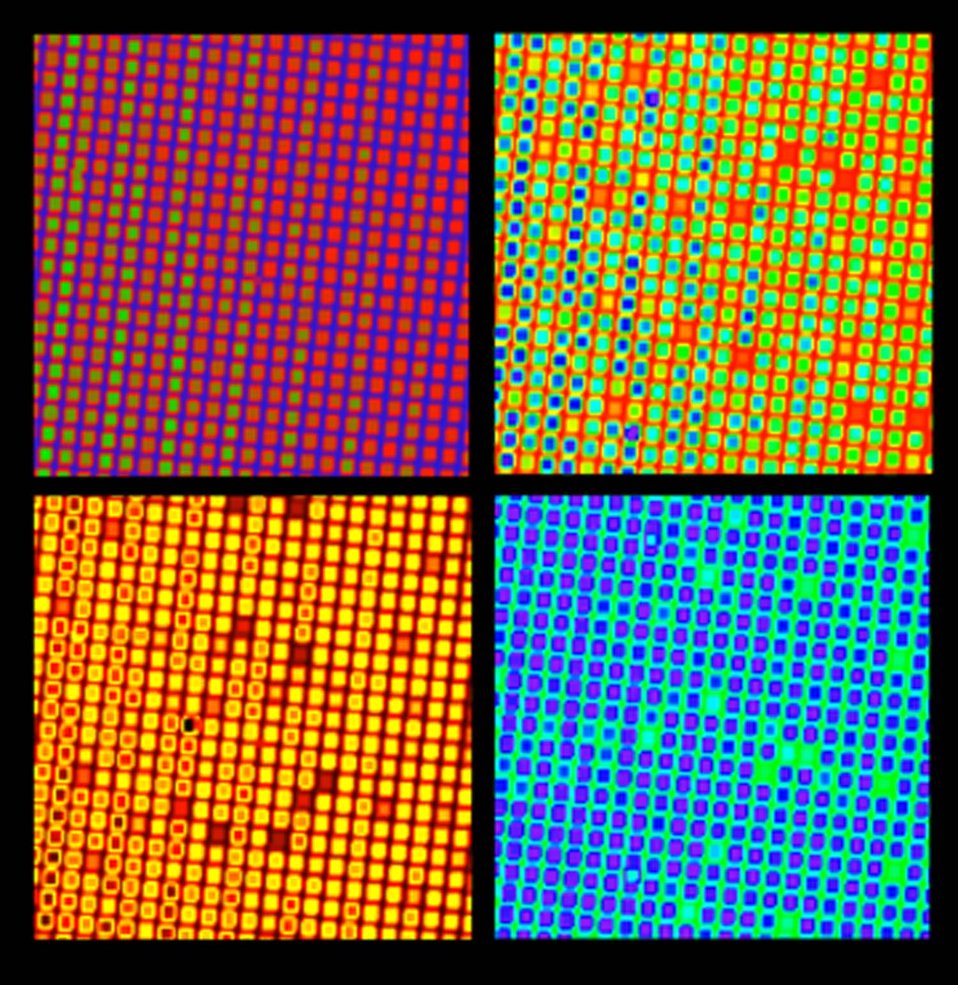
Frequency Brush

False-color images of the 'fingerprints' of molecular iodine, each taken under different experimental conditions using a NIST frequency brush created with an ultrafast visible laser. The squares within each frame reveal the frequency and intensity of light from individual 'bristles' of the brush. The variation in the colors reveal where the iodine absorbs specific optical frequencies.